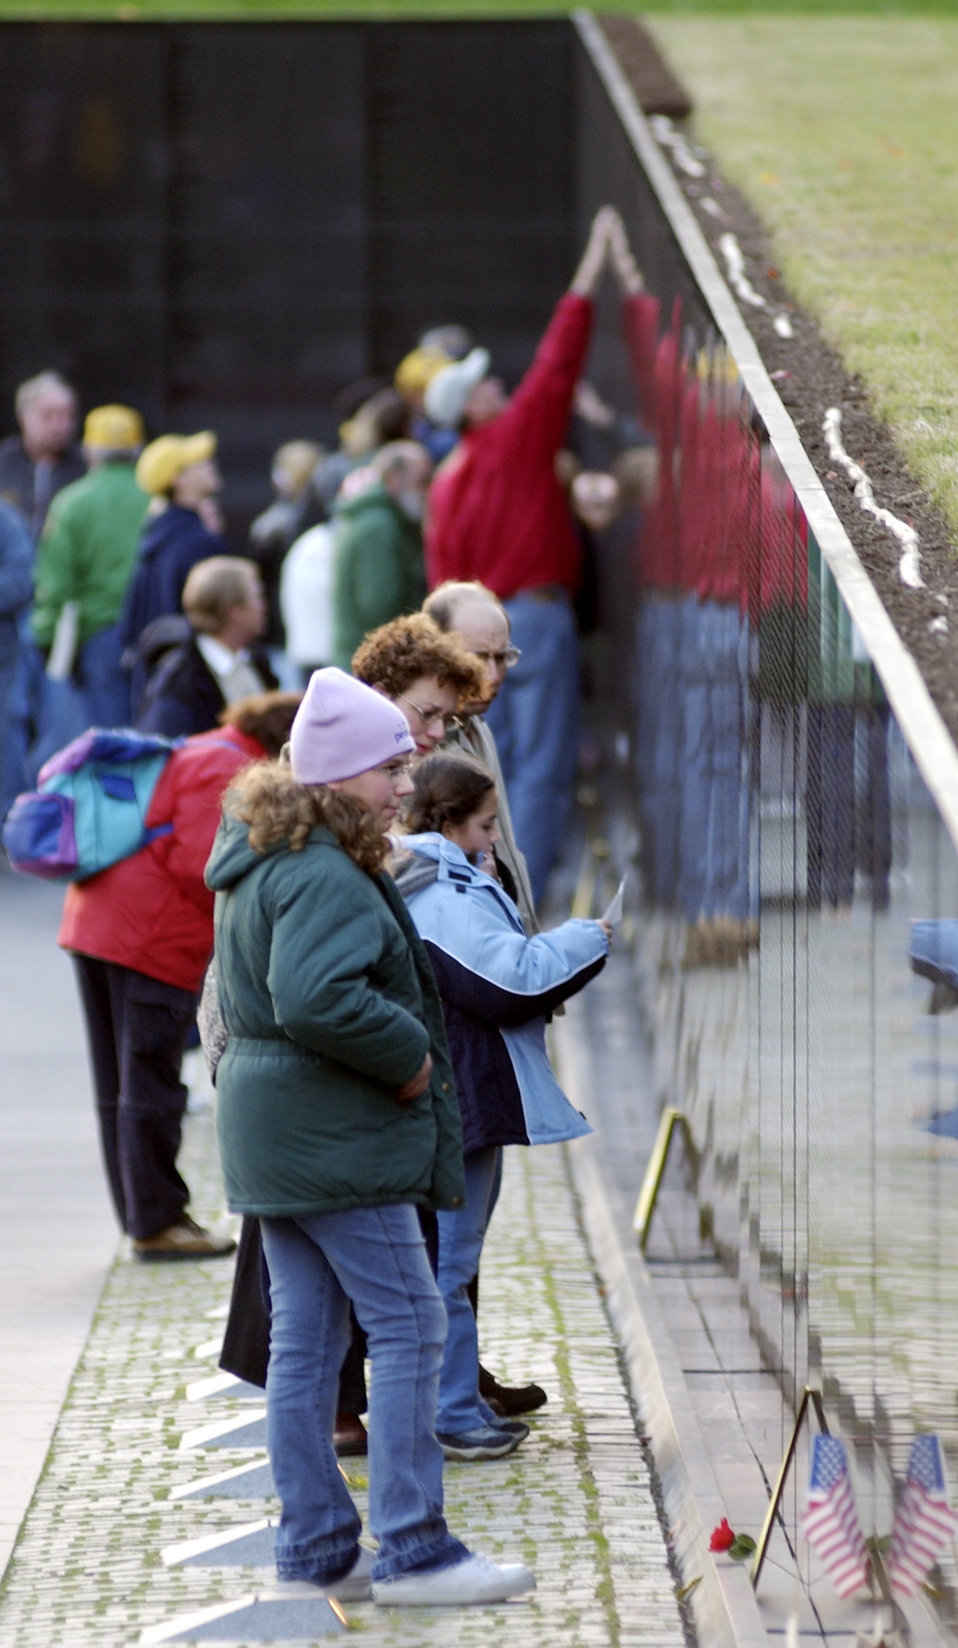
Thousands come to commemorate The Wall's 20th

WASHINGTON -- Thousands passed along the